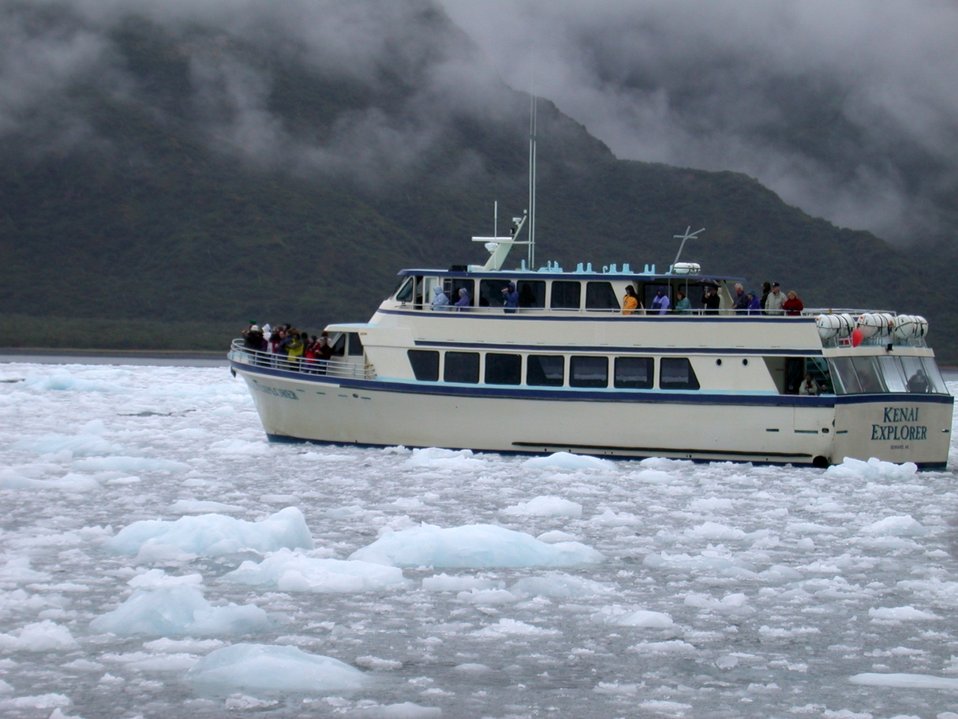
Tourist vessel Kenai Explorer in Kenai Fjords area.